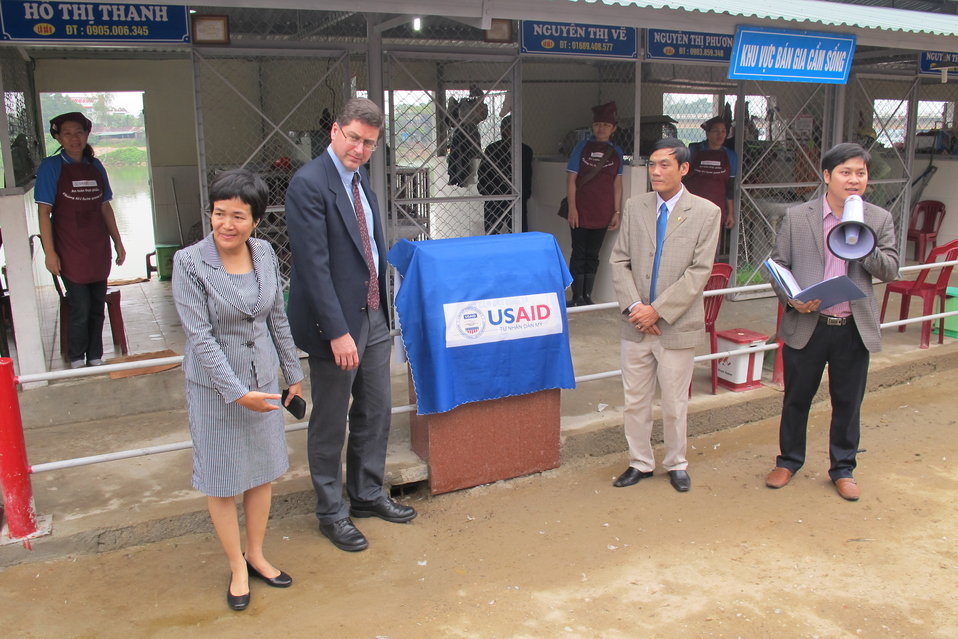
Promoting Hygiene and Sanitation at Dong Ha Poultry Market